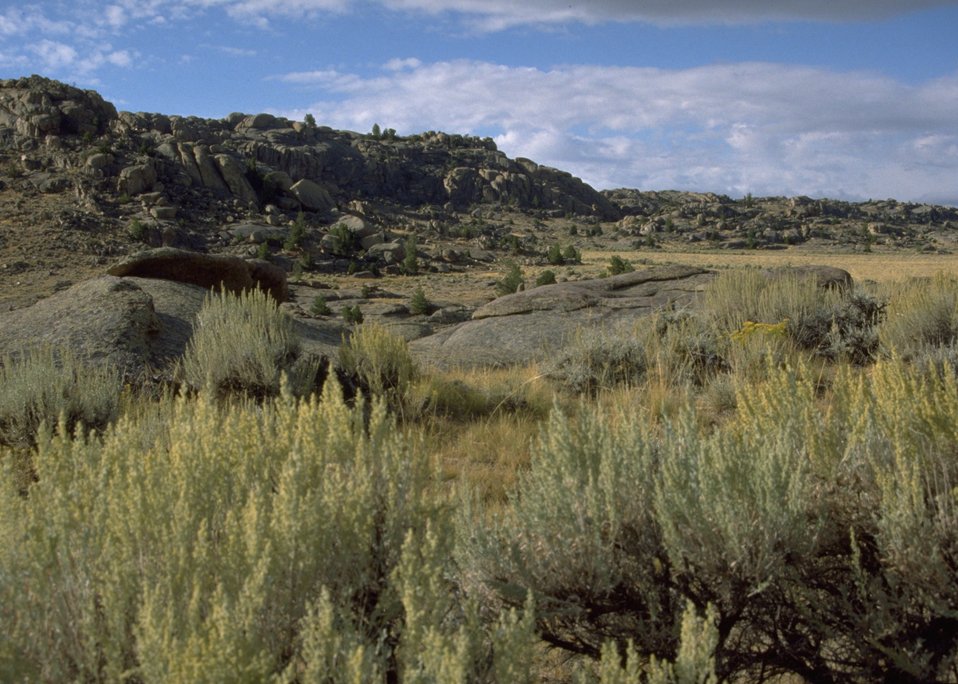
Scenic rock area.